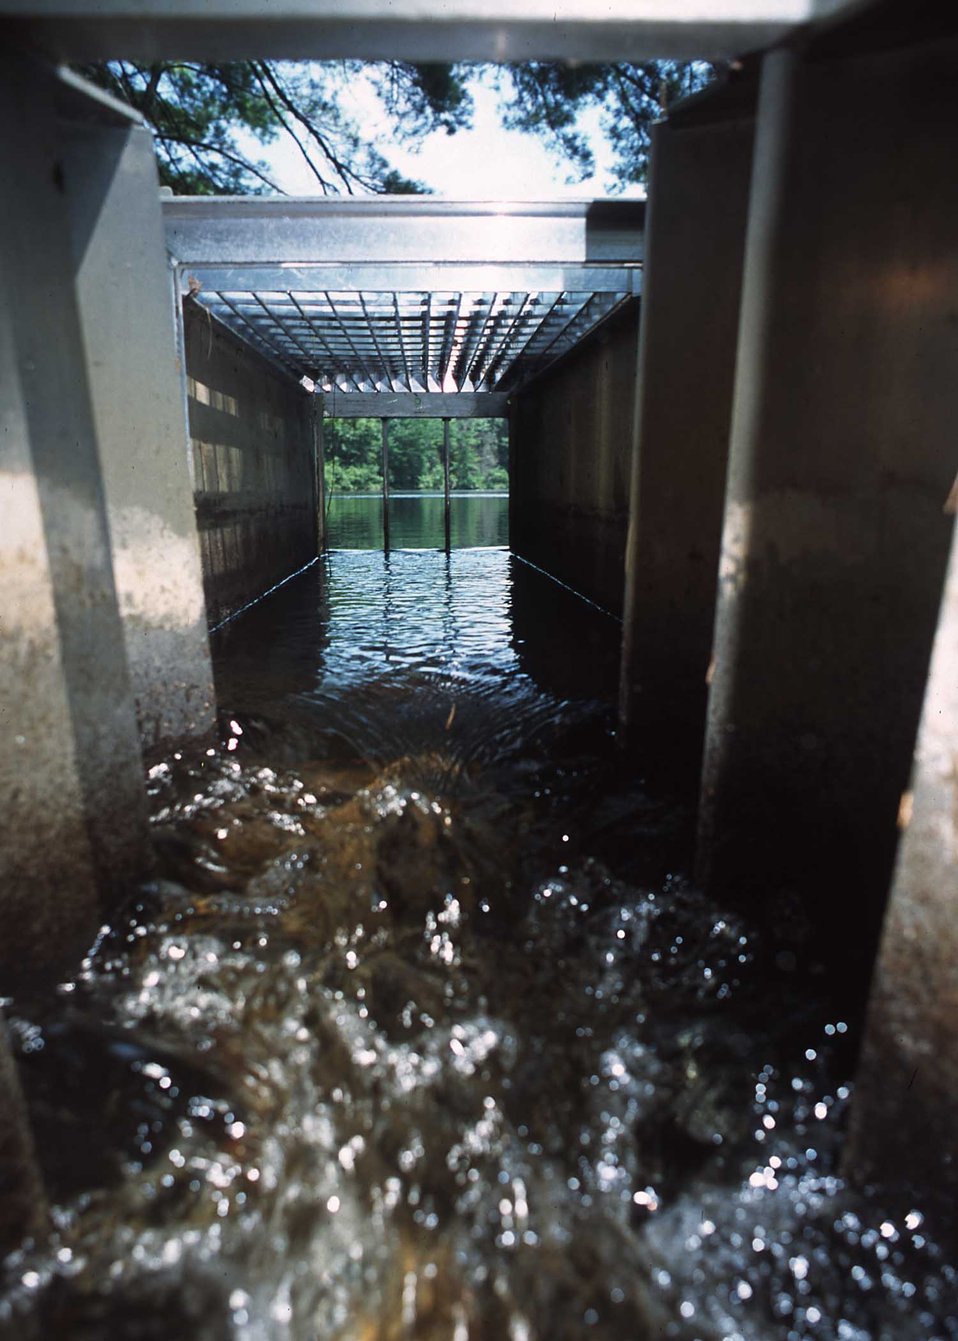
A "fish-eye" view of the exit pool of an Alaskan Steeppass fishway.